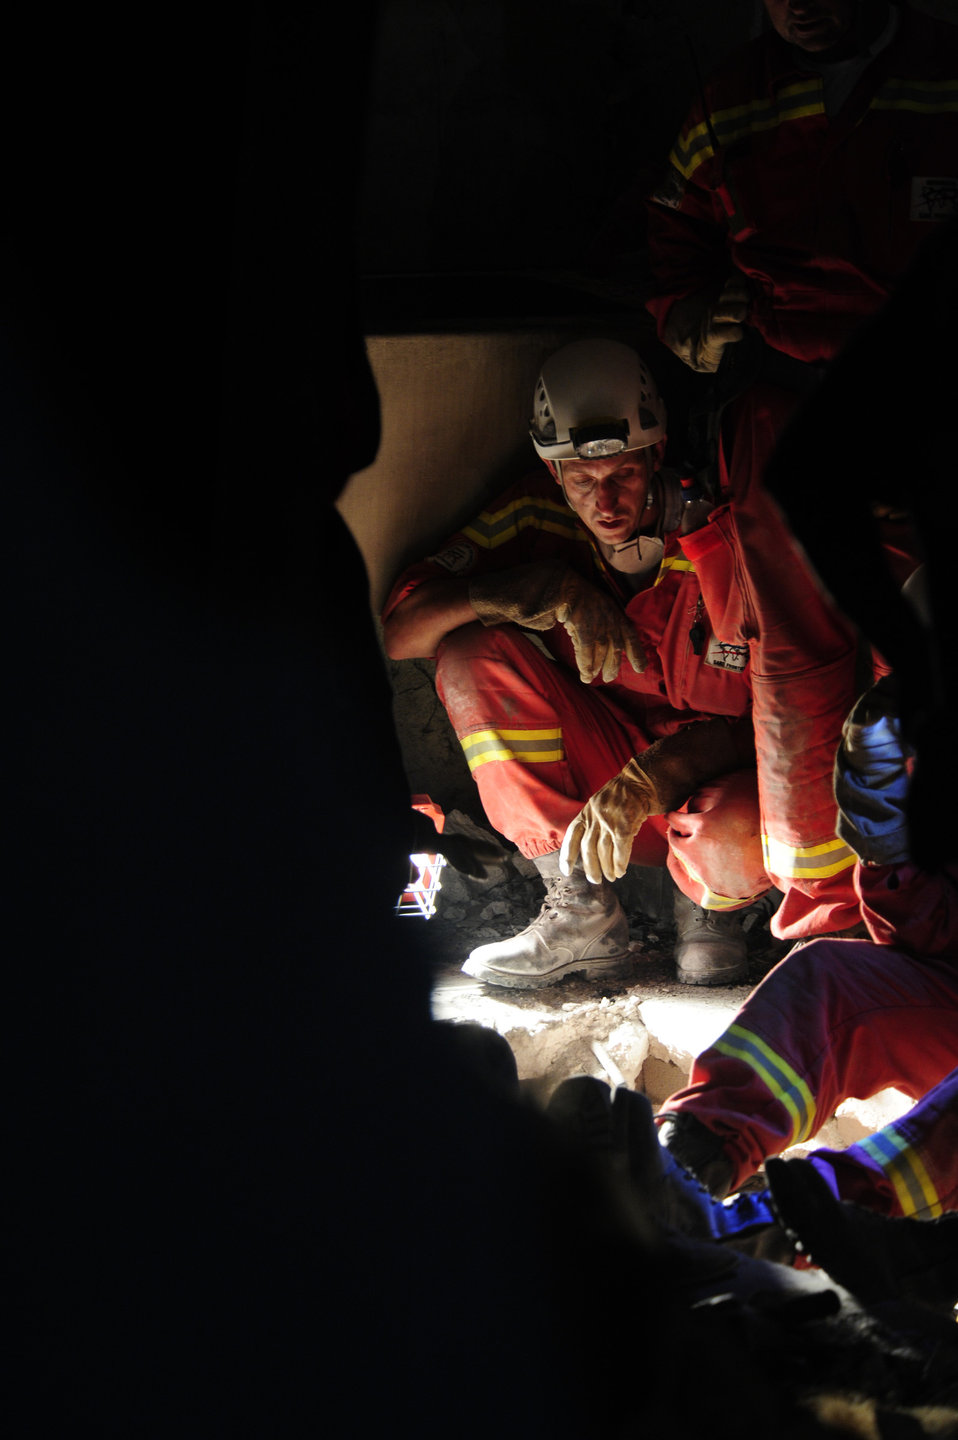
AFSOC pararescuemen work to save lives

Members of various rescue teams work Jan. 19, 2010, in Port-au-Prince, Haiti, to free a 25-year-old Haitian woman who had been trapped for seven days in a space in a collapsed building.